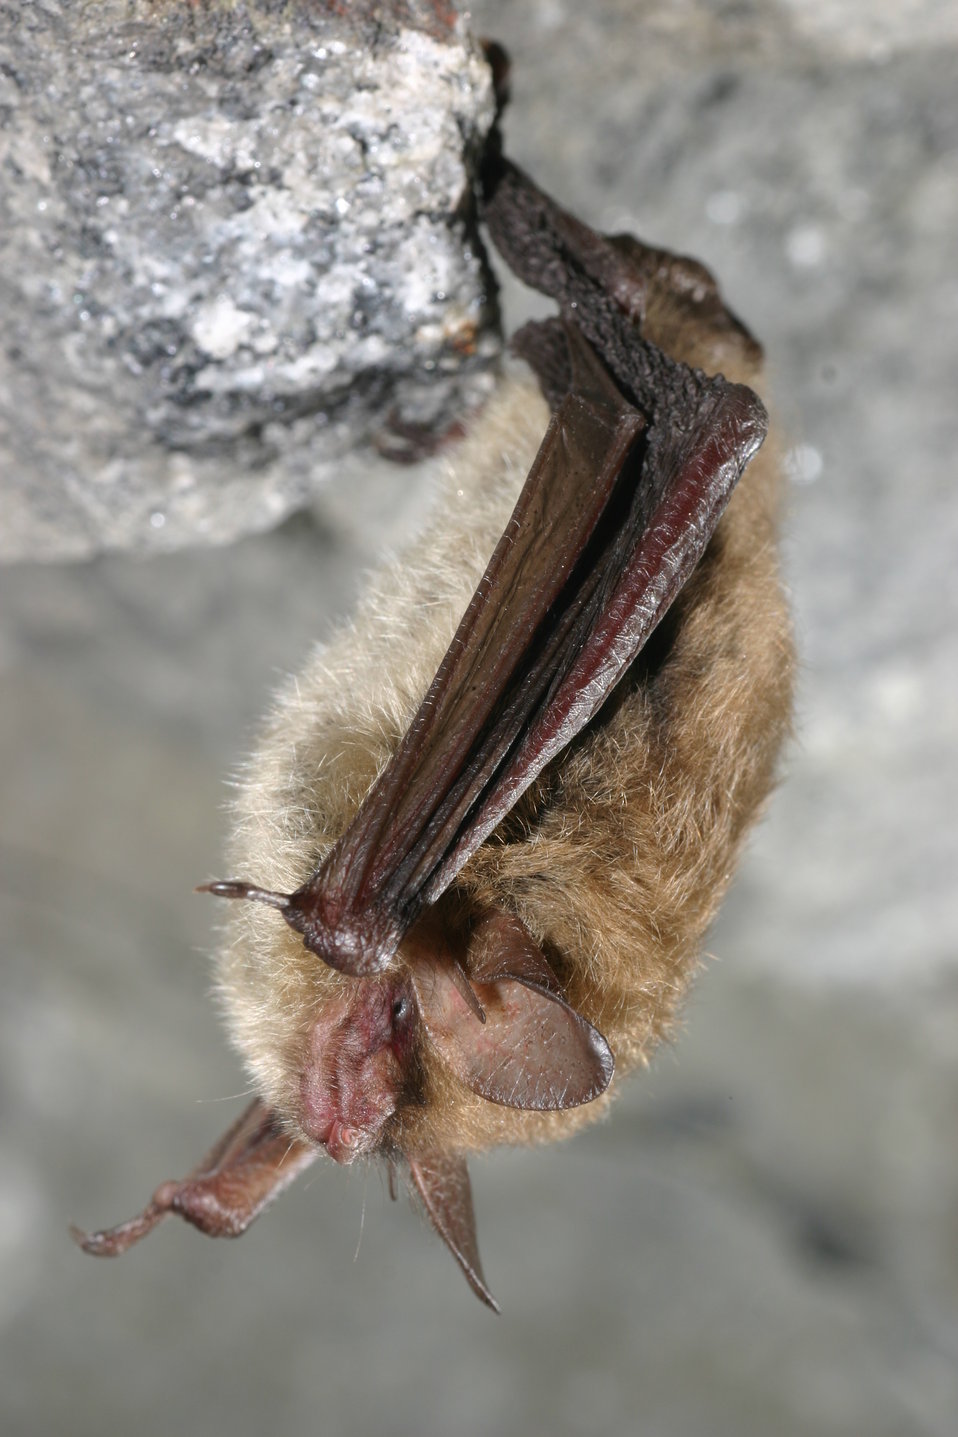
Northern long-eared bat

Myotis septentrionalis